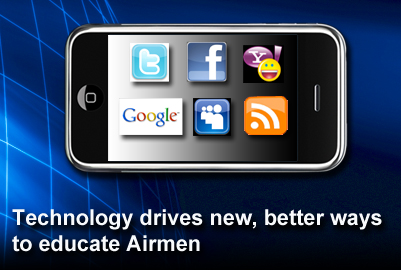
Technology Drives New Ways